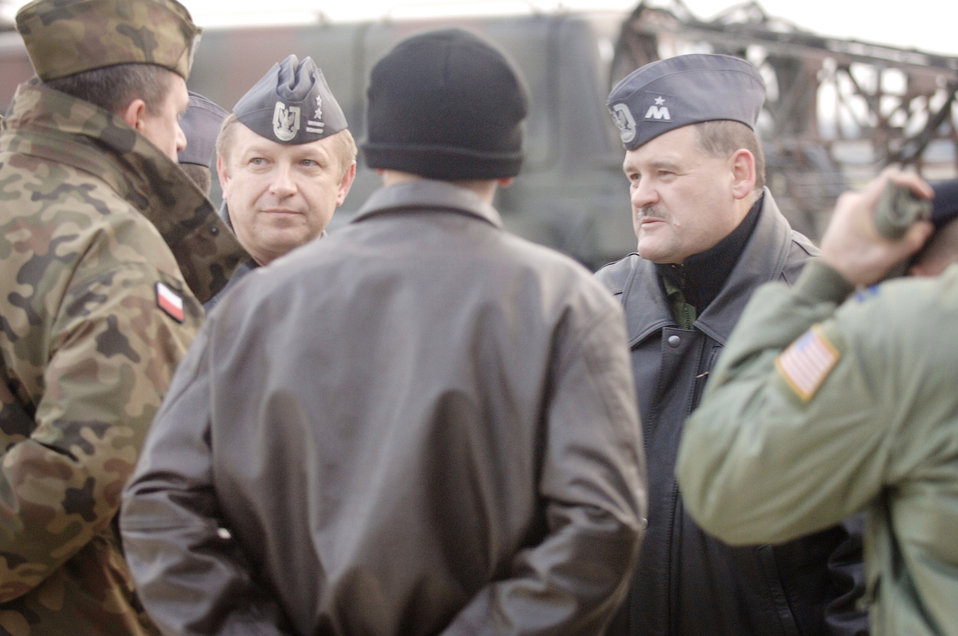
C-130 arrival in Poland marks end, new beginning

American Airmen talk to Polish air force Brig. Gen. Tadeusz Mikutel (second from left) and Polish air force Lt Col Mieczyslaw Gaudyn (right) after delivering a C-130E Hercules from Ramstein Air Base, Germany, to its final destination Nov. 2, 2009, at Powidz Air Base, Poland. General Mikutel is the Polish air force's 33rd Air Base commander, and Colonel Gaudyn is the 14th Air Transport Squadron commander. The Ramstein AB aircraft and crew, from the 37th Airlift Squadron, delivered the second U.S. Air Force C-130E to Poland as part of a program for building partnership capacities amongst United States allies.